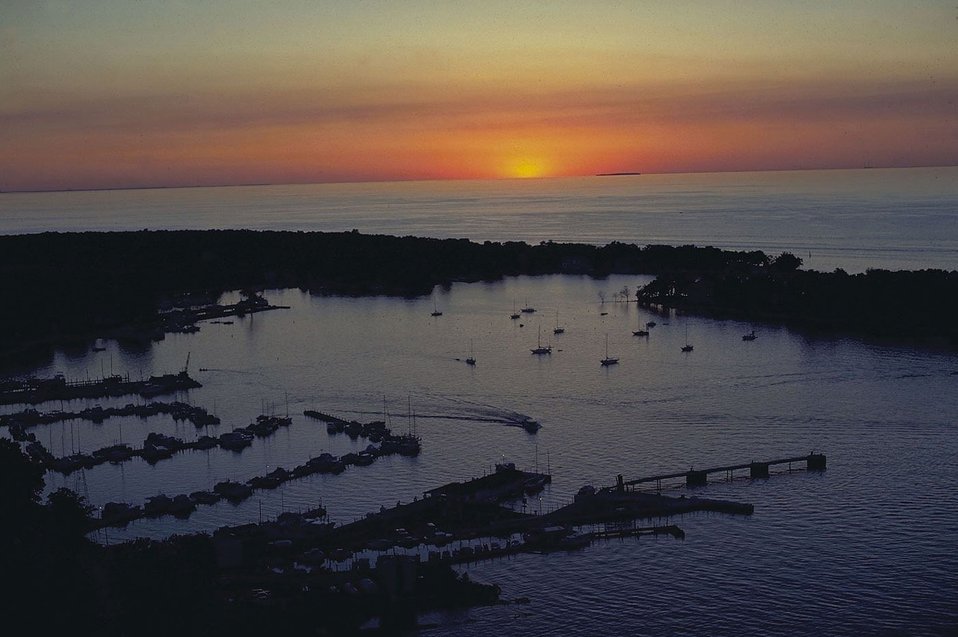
Unidentified harbor at sunset